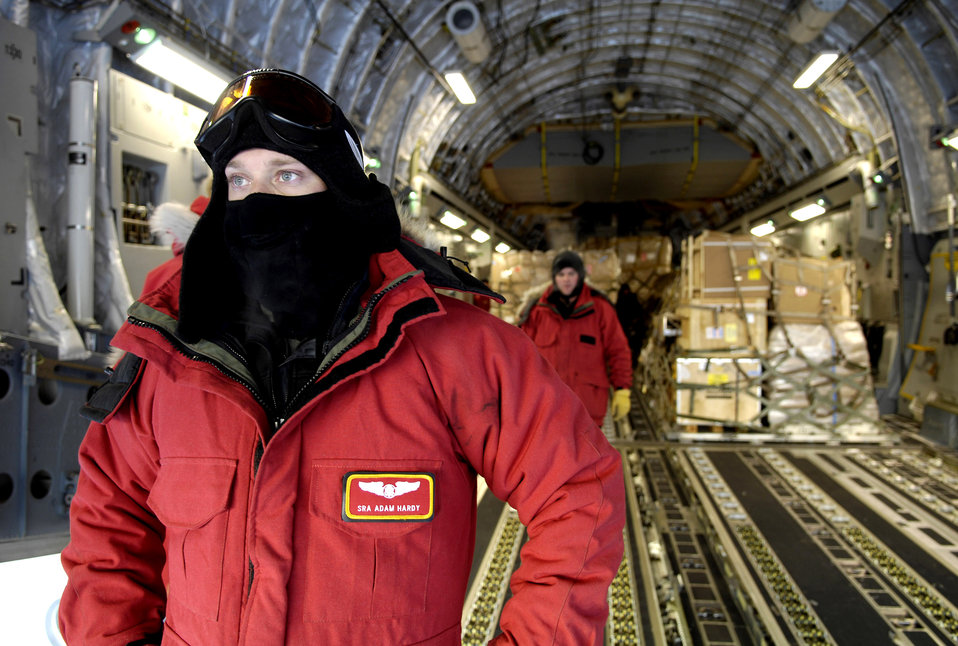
Fighting the cold

Senior Airman Adam Hardy waits to marshal a forklift to the back of a C-17 Globemaster III during an Operation Deep Freeze winter fly-in mission Aug. 25 at Pegasus White Ice Runway, Antarctica.